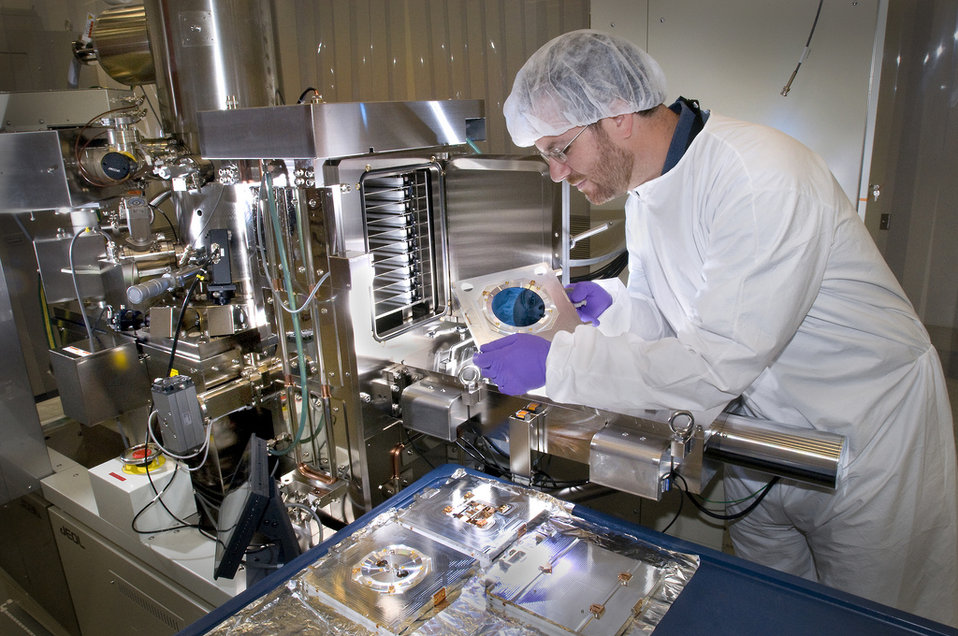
Located within BNL Center for Functional Nanomaterials, this electron beam lithography writer allows scientists to draw any pattern or design and then transfer that image to silicon, metal or any kind of materials.
With the e-beam tool, scientists can write features down to eight nanomaters and over an area as large as several millimeters.